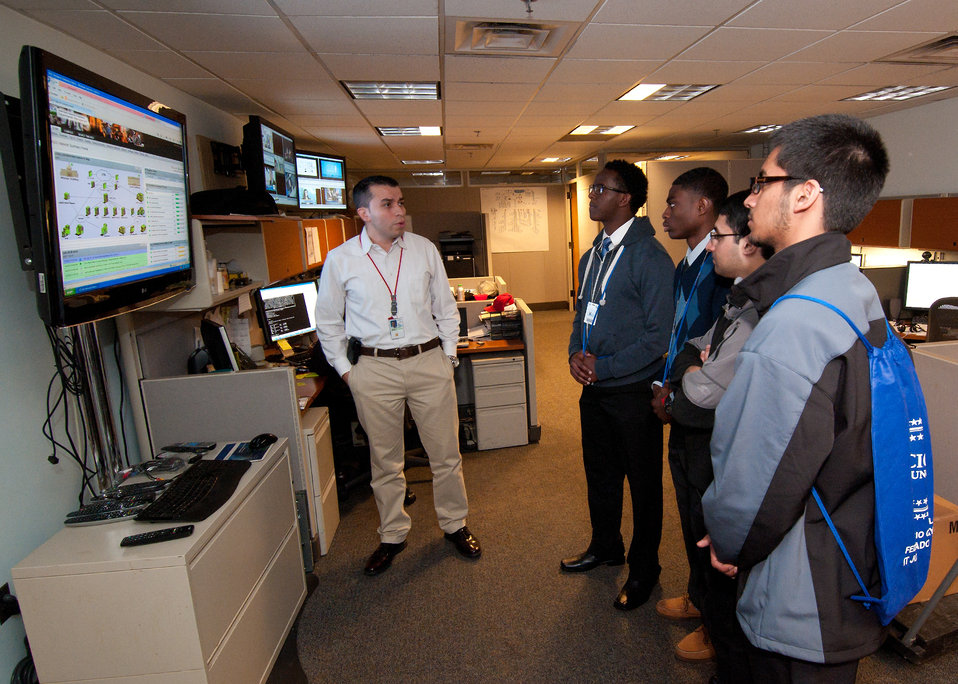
U. S. Department of Agriculture (USDA) Network Operations Center employee Nelson Flores explains the network architecture to students from Edison Academy in Fairfax, VA USDA Information Technology (IT) Job Shadow Day held by the USDA Office of the Chief Information Officer (OCIO) to introduce local high school students to careers in information technology in Washington, D.C. on Tuesday, Apr. 2, 2013.